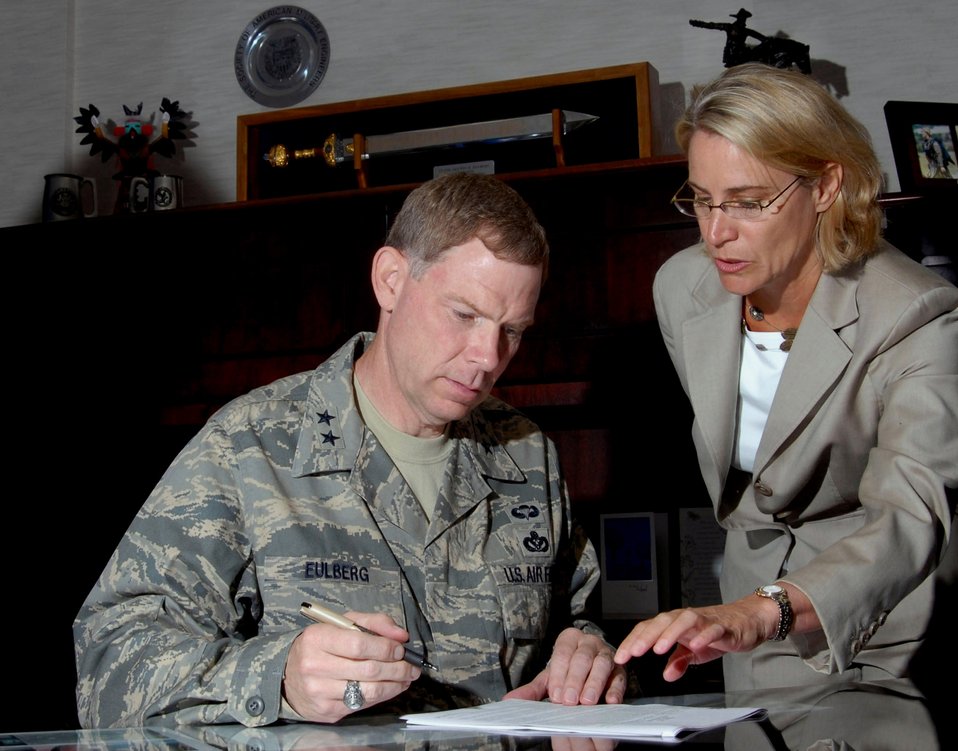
Three private housing projects to begin Oct. 1

Maj. Gen. Del Eulberg signs the lease for his future home at Bolling Air Force Base, D.C., with help from Leslie Catlin. General Eulberg is the Air Force civil engineer at Headquarters Air Force in Washington, D.C. Ms. Catlin is the Pinnacle Operations director. Pinnacle is one of the management companies working with the Air Force to providing better housing to its members.